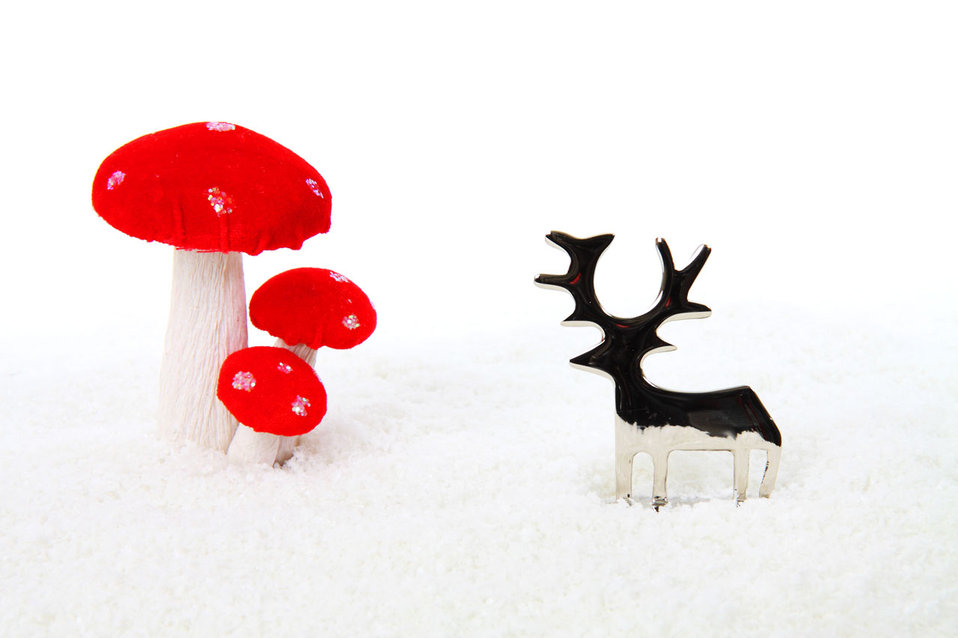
Reindeer and christmas decoration

Reindeer and mushroom christmas decoration in snow.